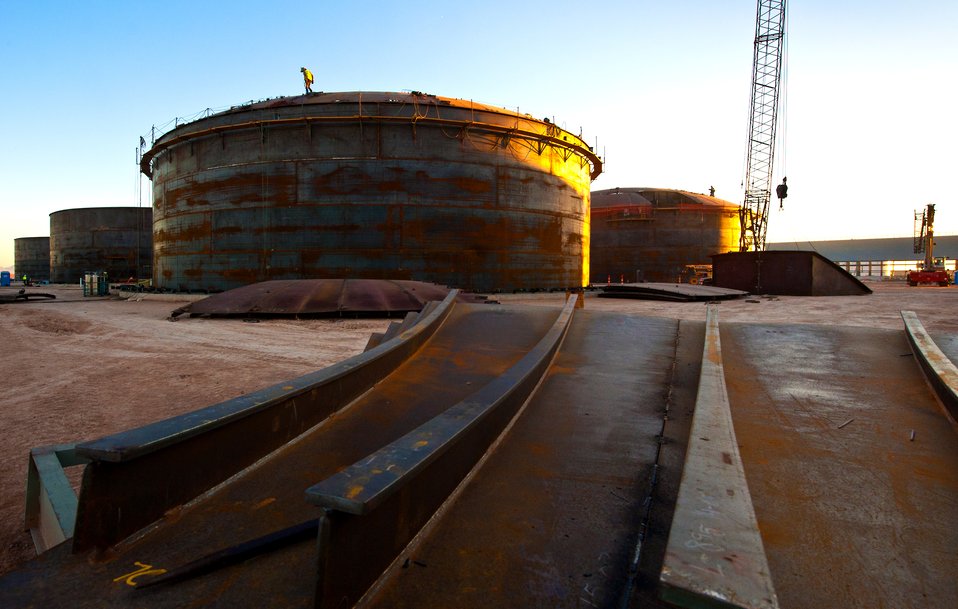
WORKERS INSTALLING MIRRORED PARABOLIC TROUGH COLLECTORS.

Workers construct one of a dozen thermos like molten salt tanks at Abengoa's Solana Plant. Thermal storage will provide up to 6 hours of dispatchable energy to be used after sunset of if cloudy. The molten salt will generate electricity with conventional steam turbines. Solana is a 280 megawatt utility scale solar power plant (CSP) under construction in Gila Bend, Arizona, USA. When finished it will generate 280MW's providing over 70,000 Arizona homes with clean, sustainable power.